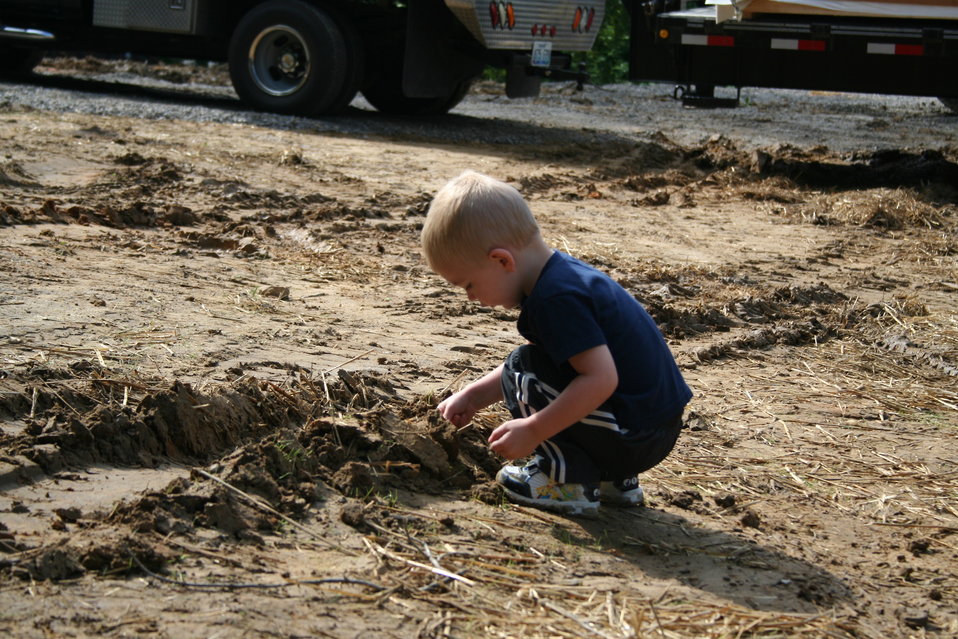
Easton Barnett plays in the dirt on the site of his new home being built in McCreary County, KY. The U.S. Department of Agriculture’s (USDA) Rural Development (RD) in partnership with the Kentucky Baptist Fellowship and Kentucky Highlands Investment Corporation’s Southern Tier Housing provided funding for the construction of a home for the Barnett family.